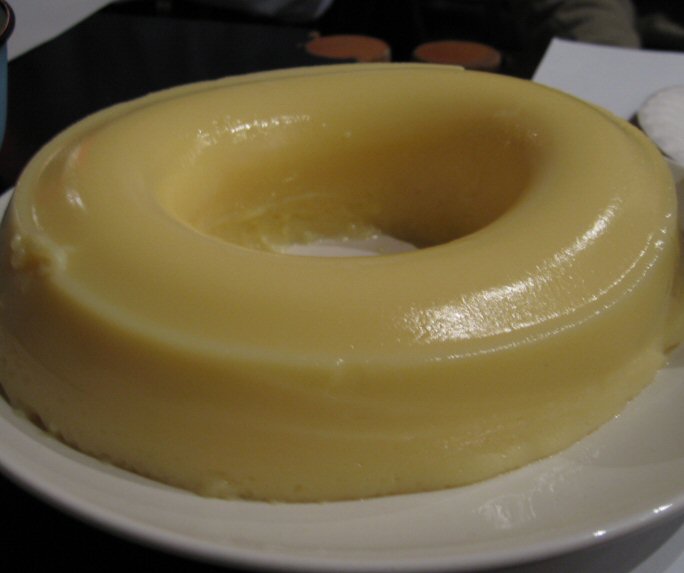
Pudding, made in Denmark Dansk: Budding i Danmark